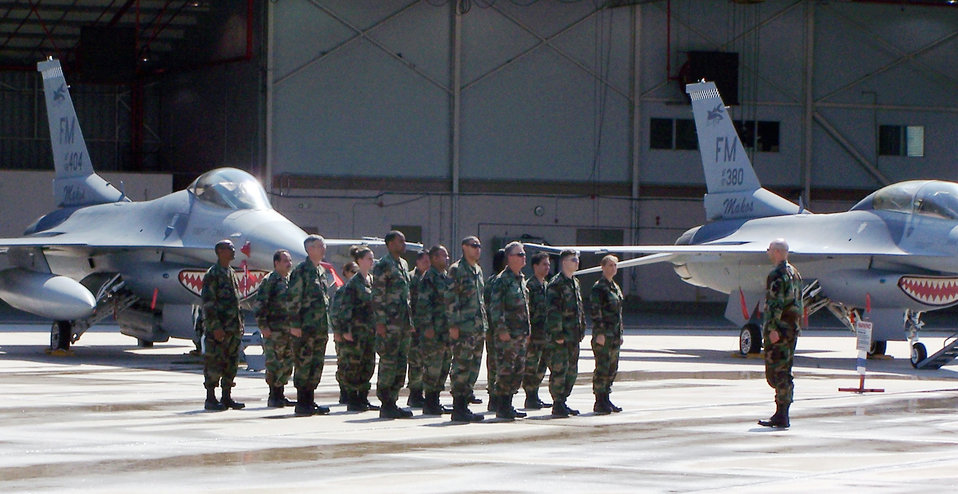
Air Force Reserve goes Hollywood

Airmen from the Air Force Reserve Command's 482nd Fighter Wing at Homestead Air Reserve Base perform as extras for the Warner Brothers television pilot